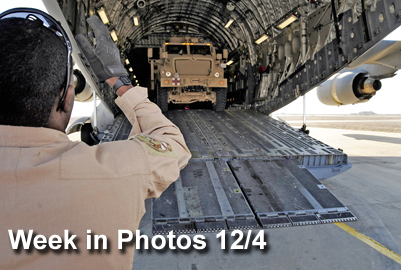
Air Force Week in Photos 12/4

Air Force Week in Photos for Dec. 4 highlights photos from around the Air Force. In this photo by Senior Airman Tony R. Ritter, Airman 1st Class Raheem Crockett guides a mine-resistant ambush protected vehicle as it is loaded on a C-17 Globemaster III Dec. 1, 2009, on the Ali Base, Iraq, airfield.